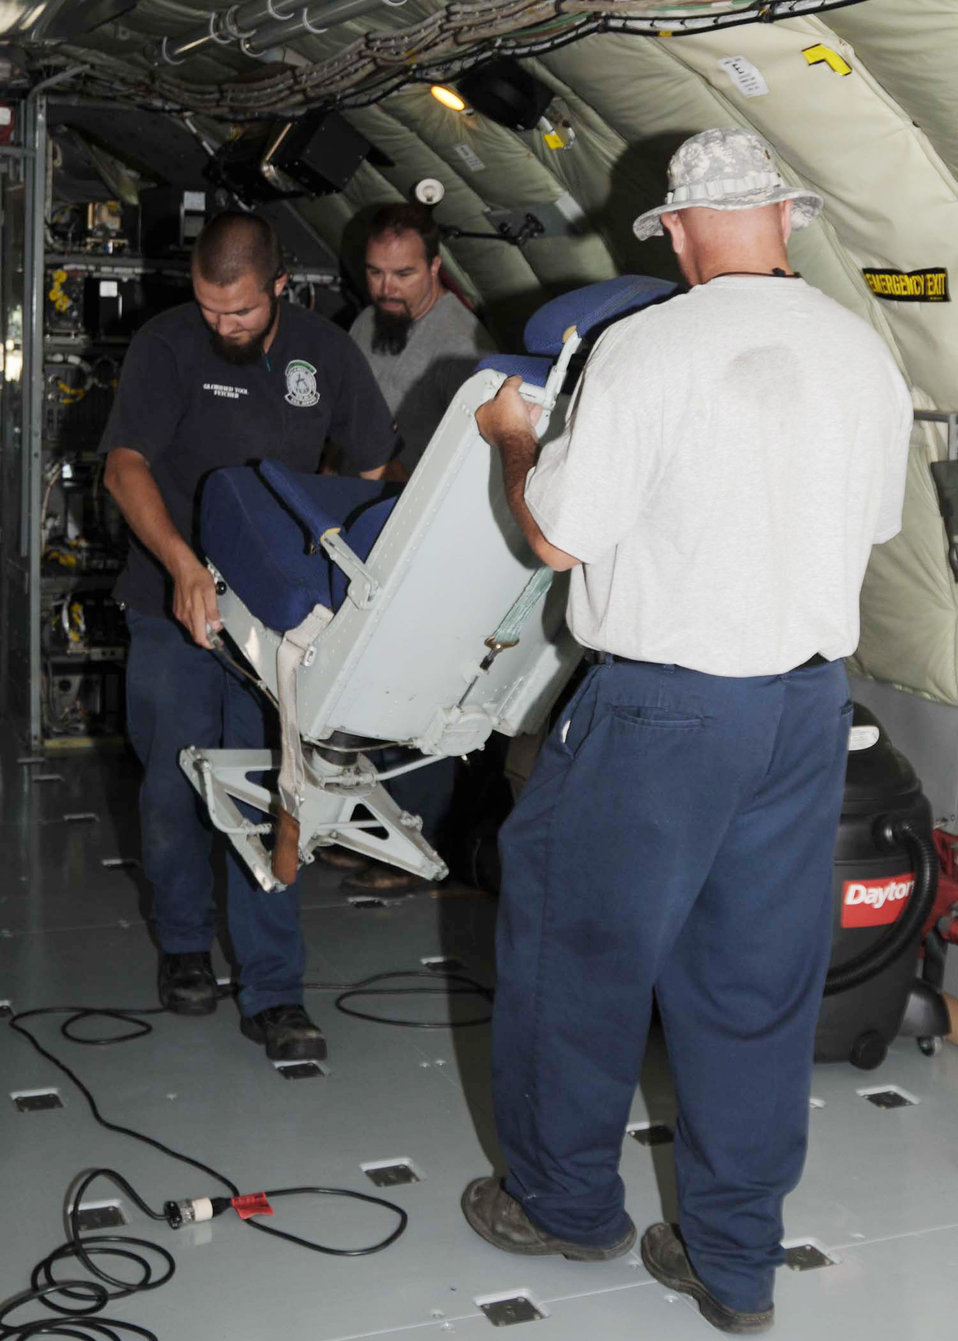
Altus team shoots for 'A' rating at AMC Rodeo

Members of the 97th Maintenance Directorate move chairs from the cockpit of a KC-135 Stratotanker to install carpeting on the floor of the aircraft. The maintainers are preparing for the 2009 Air Mobility Command Rodeo at McChord Air Force Base, Wash., in July.